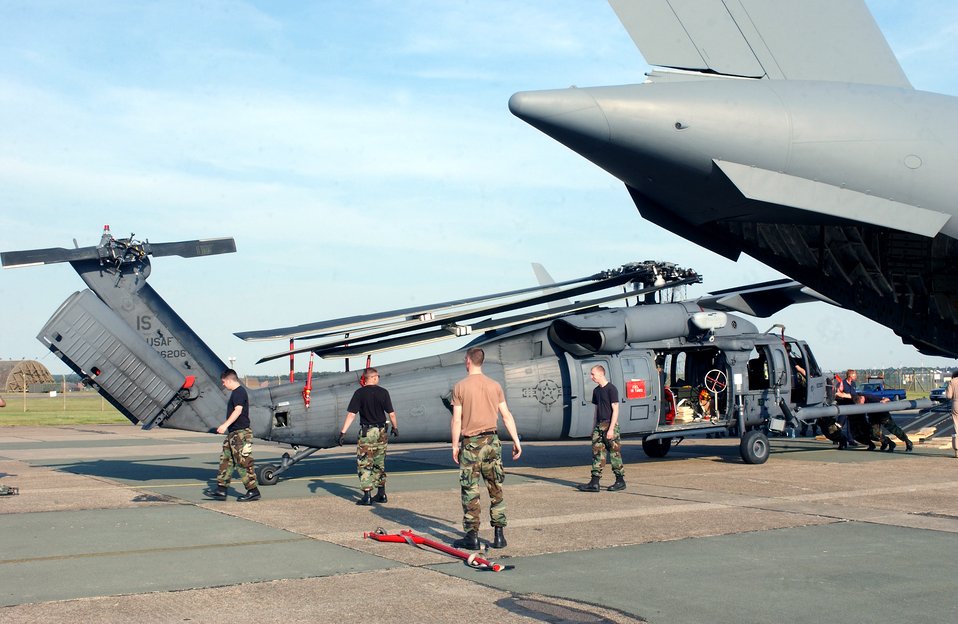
RAF Lakenheath welcomes new mission, aircraft

Airmen help unload an HH-60G Pave Hawk helicopter from a C-17 Globemaster III at Royal Air Force Lakenheath, England, on Monday, June 12. The helicopters are being reassigned to RAF Lakenheath from Naval Air Station Keflavik, Iceland.